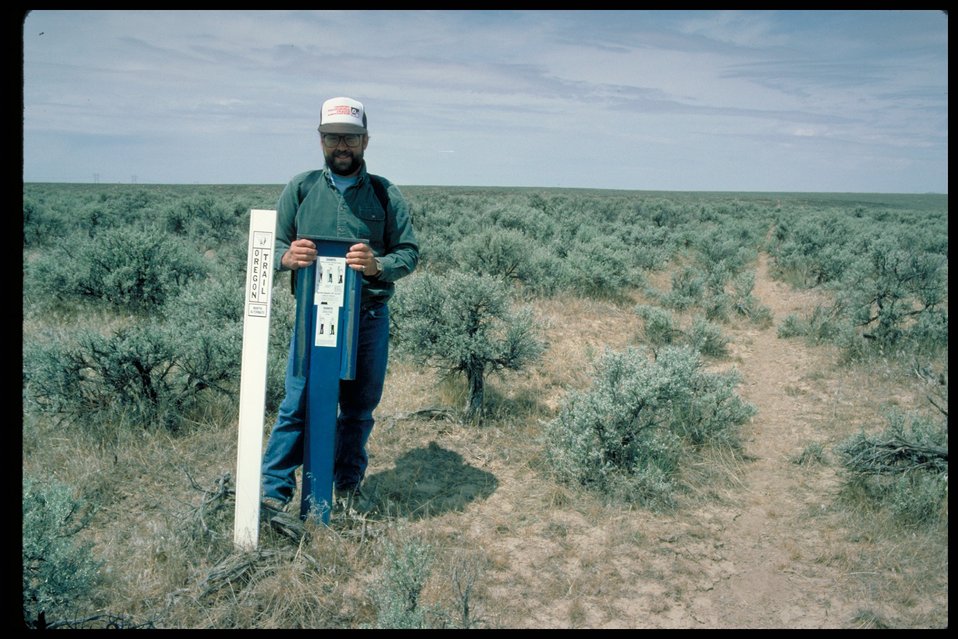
Oregon Trail east of Alkali Creek Lower Snake River District